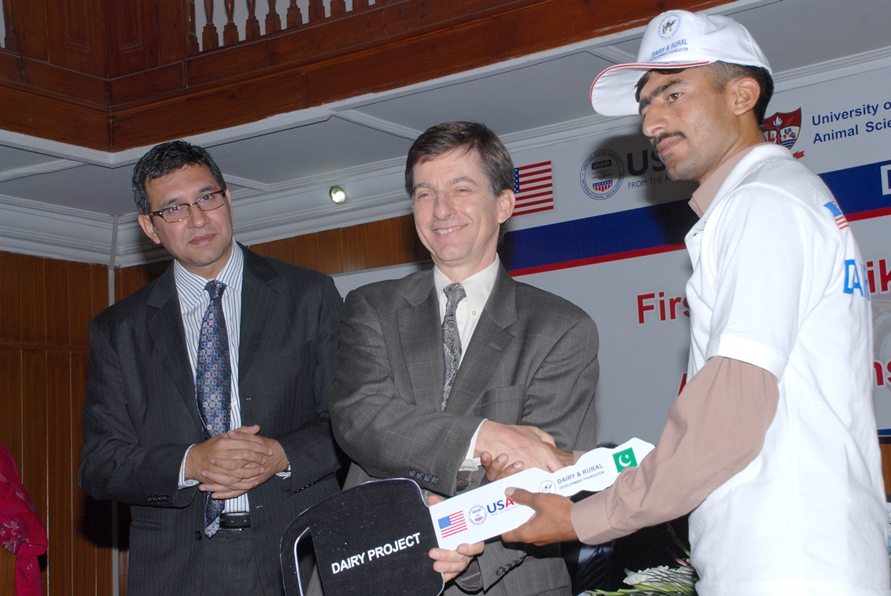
USAID Mission Director Dr. Andrew Sisson presenting motorcycle keys to a successfull AI technician